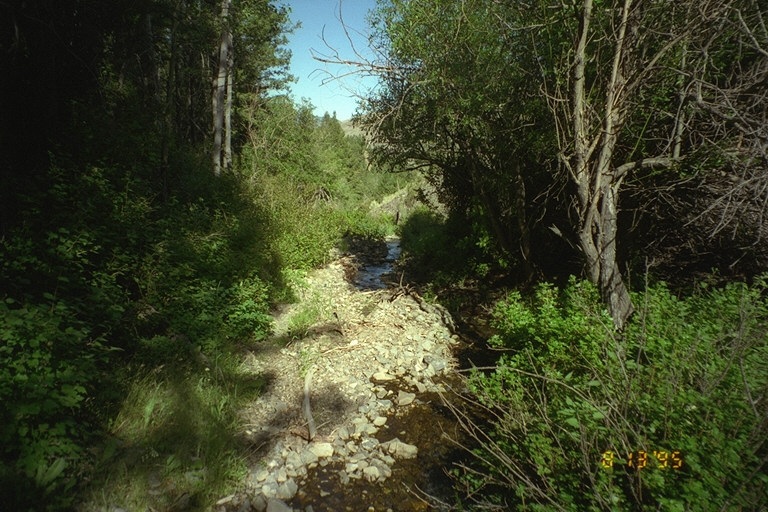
Riparian area Public Lands Salmon Field Office UCSC Upper Columbia Salmon Clearwater District